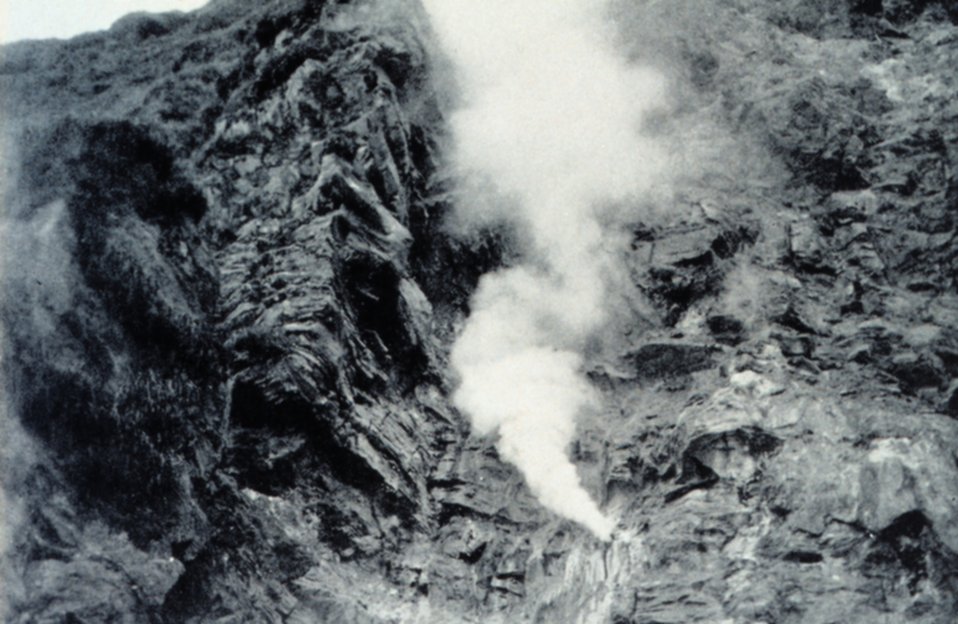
A fumarole at Kagamil Island.